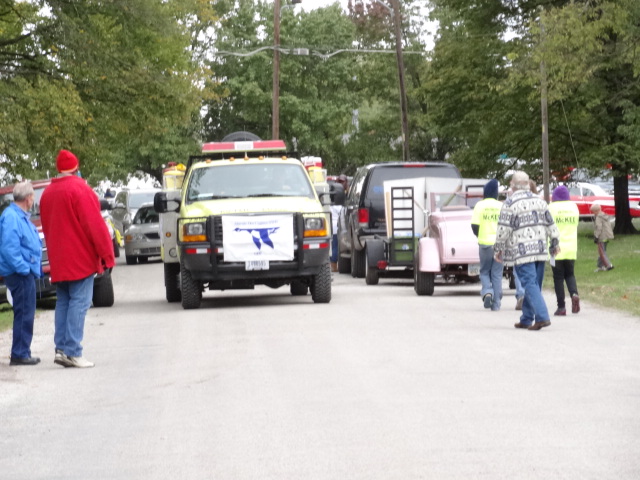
Marais des Cygnes NWR Fire Engine Geared up to be in the Parade